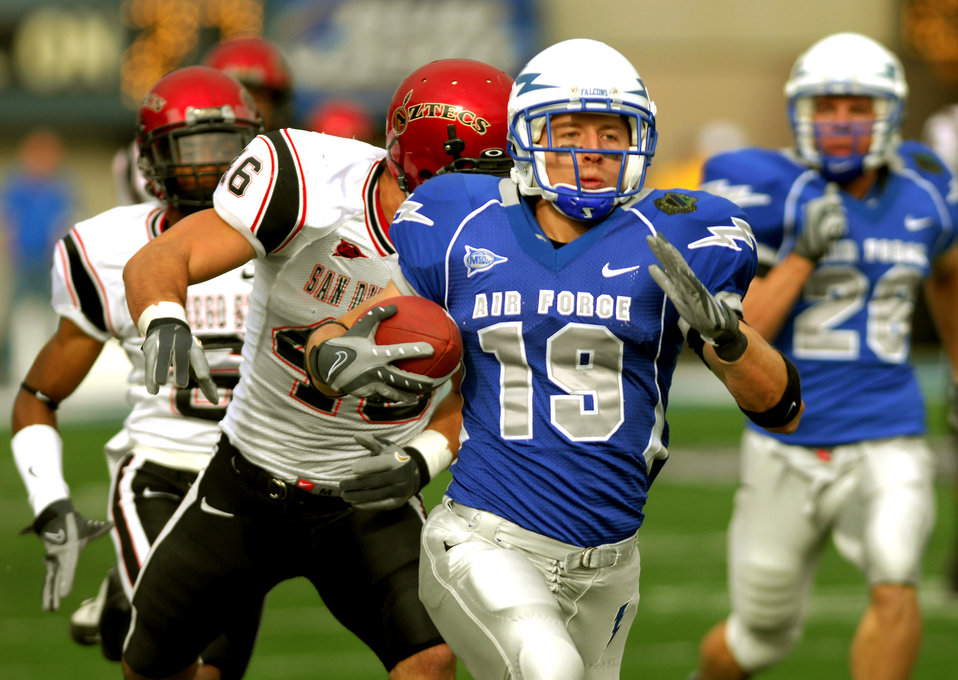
Having a great football day!

Falcon running back Ty Paffett races past San Diego State linebacker Russell Allen during Air Force's 55-23 win over the Aztecs Nov. 17 at the Academy's Falcon Stadium. Paffett rushed for a career-high 107 yards and three touchdowns, including one for 73 yards.